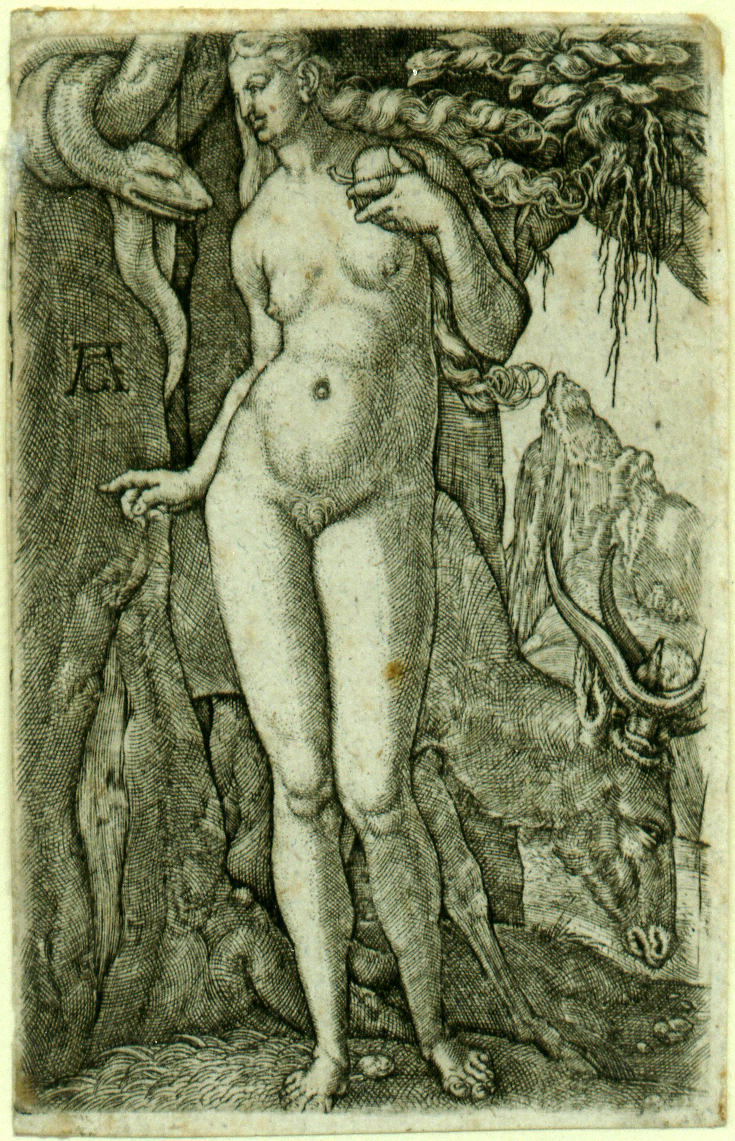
Eve with a Stag